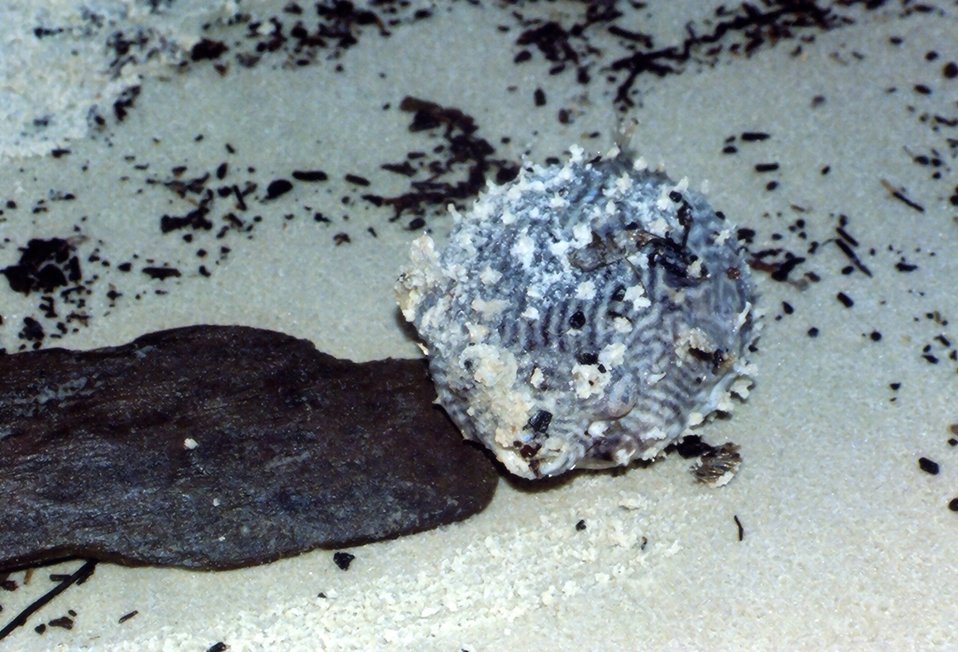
A little pufferfish washed up on the beach.